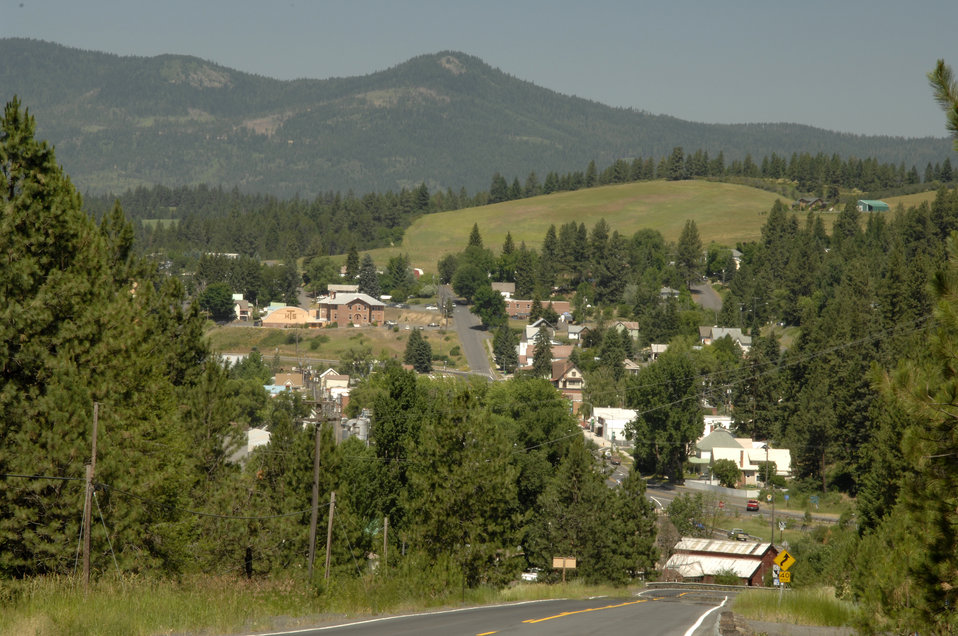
Moscow, Idaho is located in a valley near the Rocky Mountains along the Washington/Idaho border on July 8, 2008.